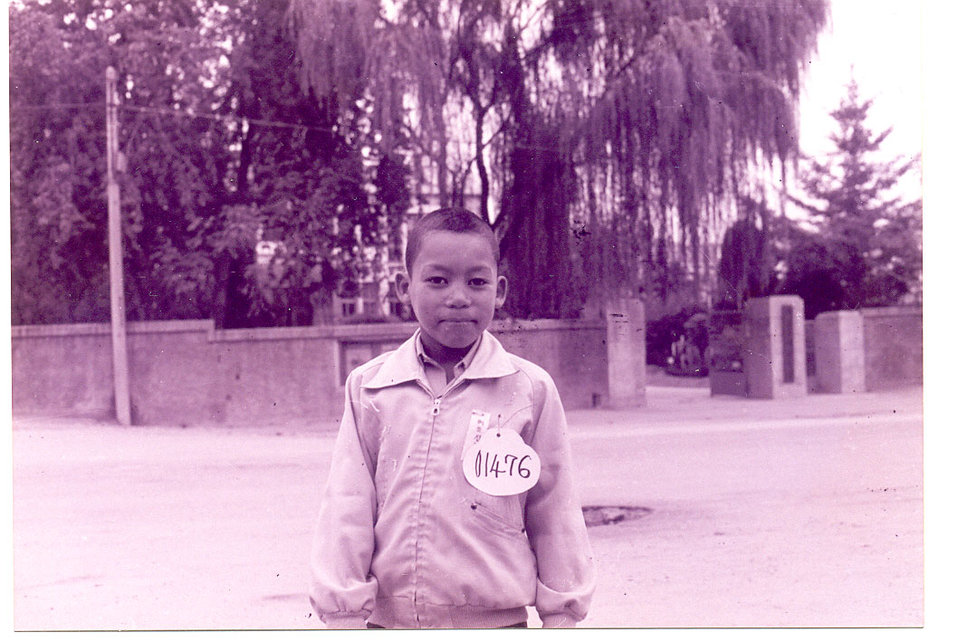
Air Force officer teaches at Korean Air University

Lt. Col. Andrew